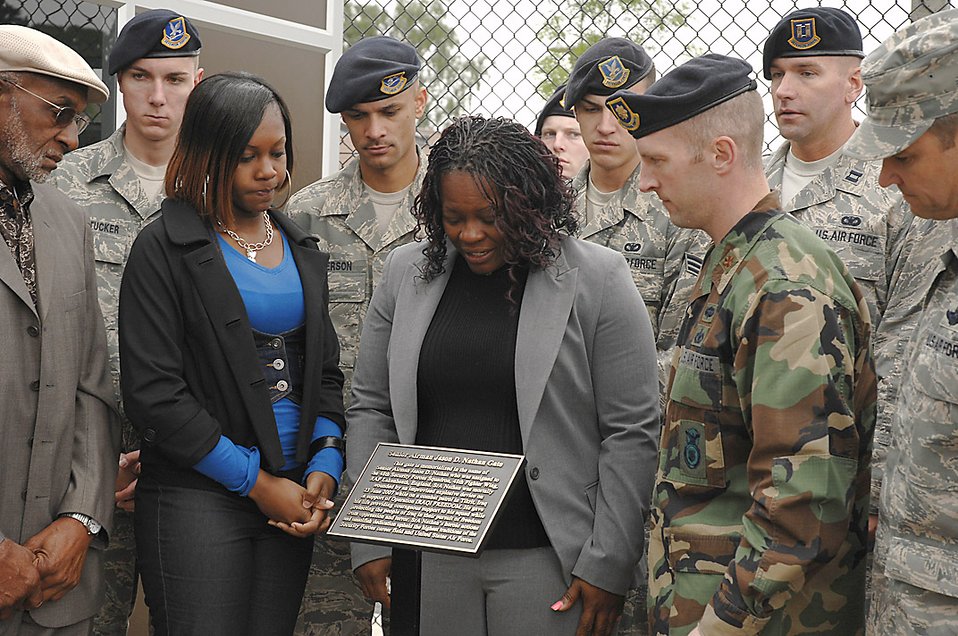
Gate dedicated to Lakenheath hero

Senior Airman Jason D. Nathan's grandfather, sister and mother view a plaque at the new Senior Airman Jason D. Nathan Gate June 1 at Royal Air Force Lakenheath, England. The gate was dedicated to Airman Nathan who lost his life June 23, 2007, while on a combat patrol in Tikrit, Iraq. Members of Airman Nathan's unit and Maj. John Northon, the 48th Security Forces Squadron commander, offered support to his family.